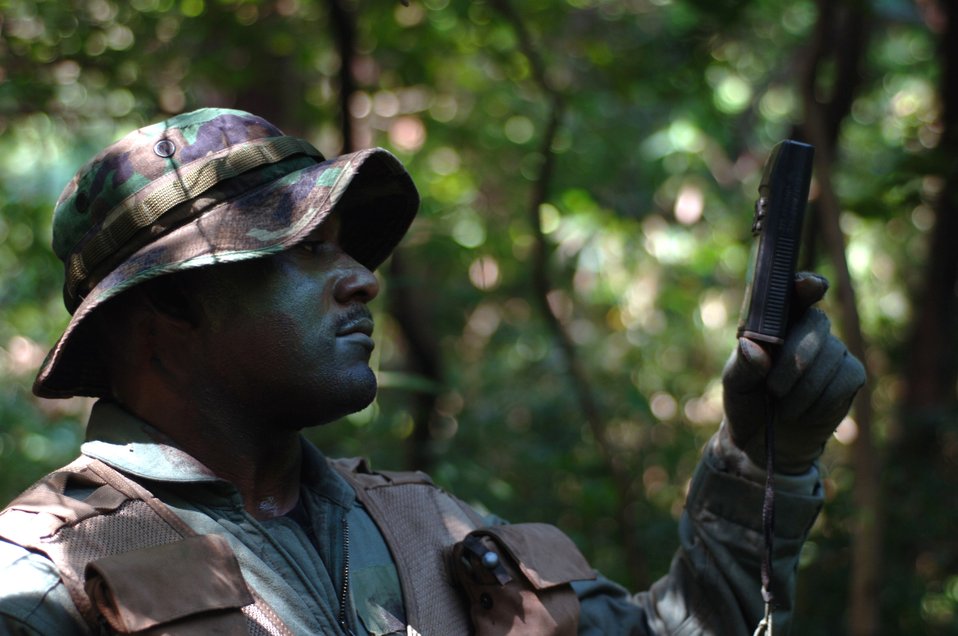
Playing with the enemy

YOKOTA AIR BASE, Japan -- Tech. Sgt. C.J. McClain uses a Global Positioning System to evade enemy forces after his aircraft was